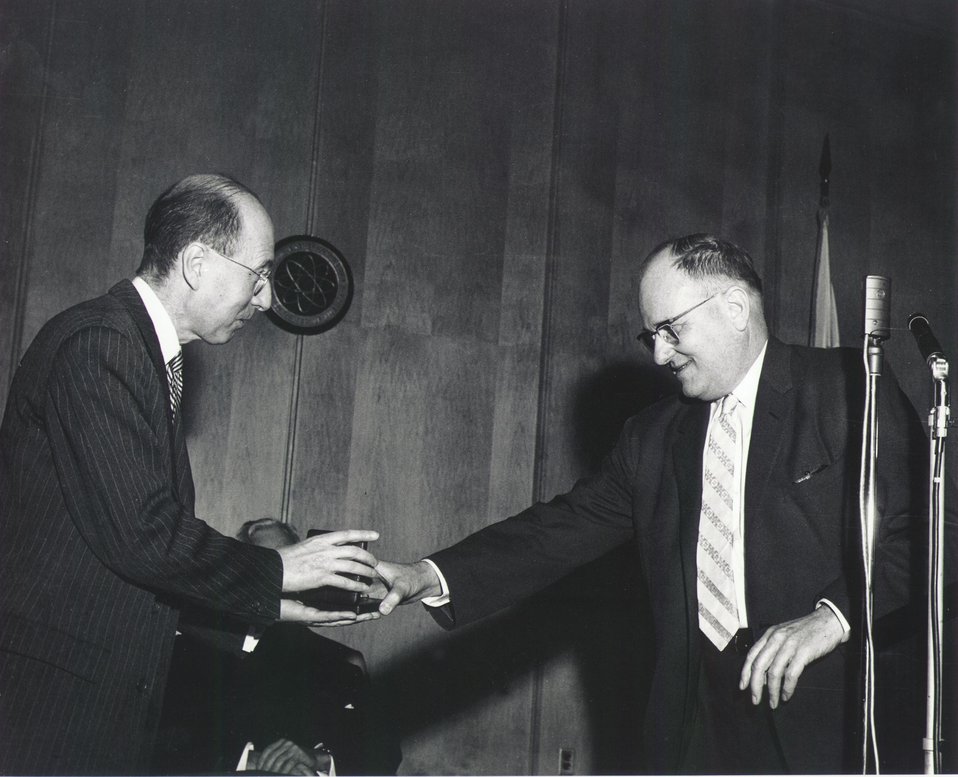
Fermi Award Ceremony for Dr. Wigner in Washington on Dec. 2, 1958.